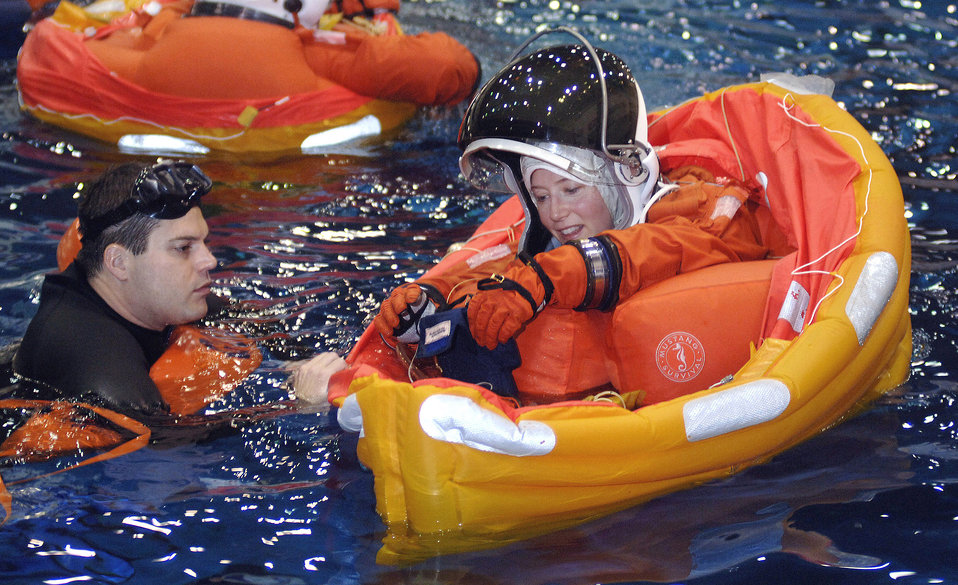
Spending an afternoon in the pool

Col. Pamela Melroy practices evacuation procedures Jan. 31 during astronaut training in the Neutral Buoyancy Lab at the Johnson Space Center in Houston. Colonel Melroy will be the shuttle commander on STS-120 scheduled to launch in September 2007.